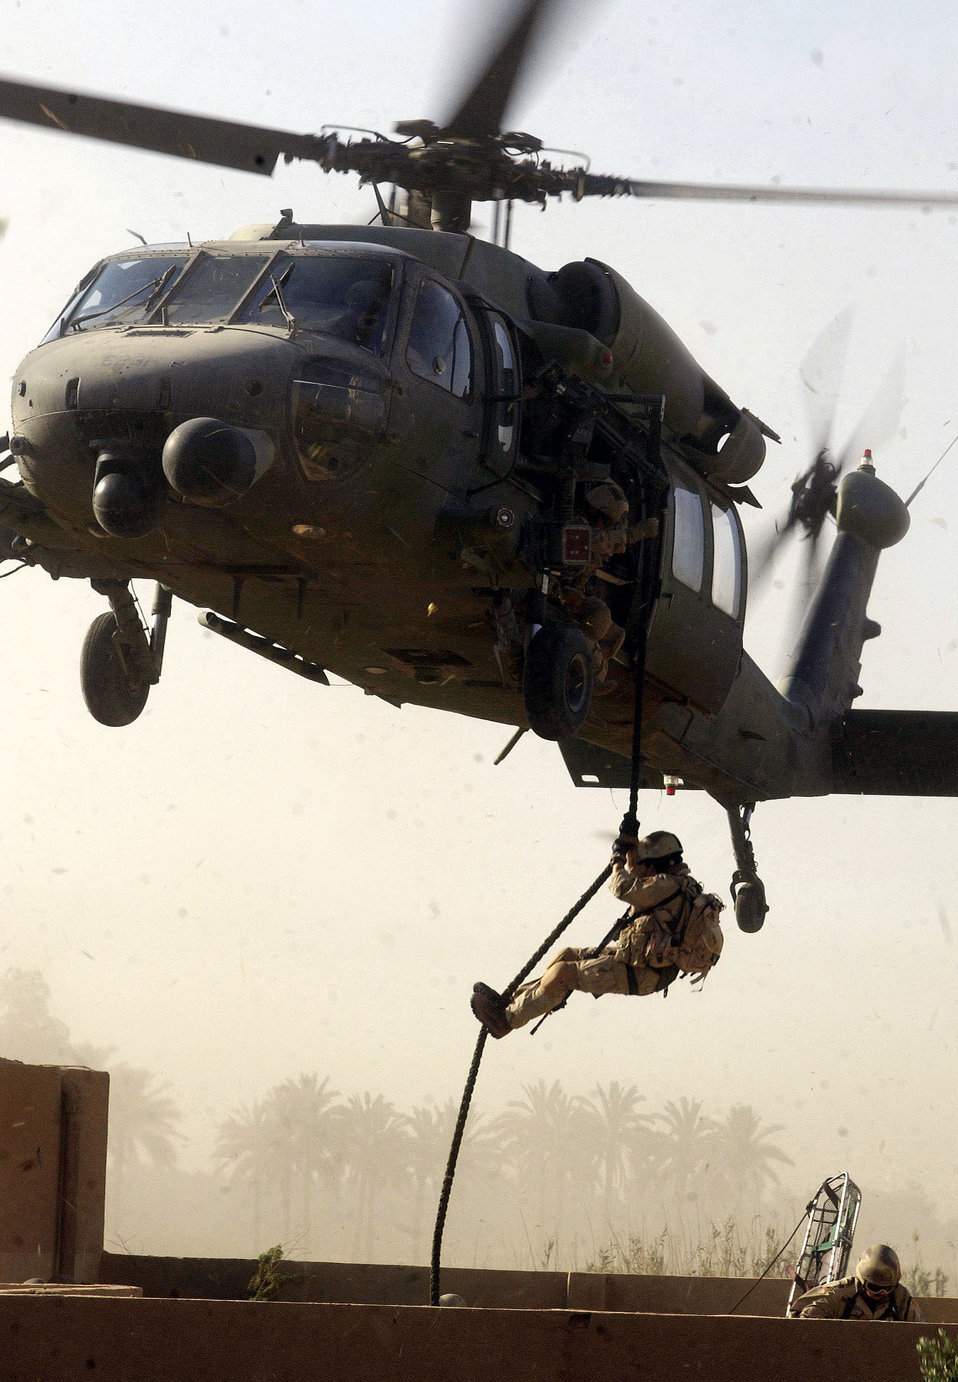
Help is here

OPERATION IRAQI FREEDOM -- A pararescueman exits an HH-60G Pave Hawk during a stokes litter extraction of a